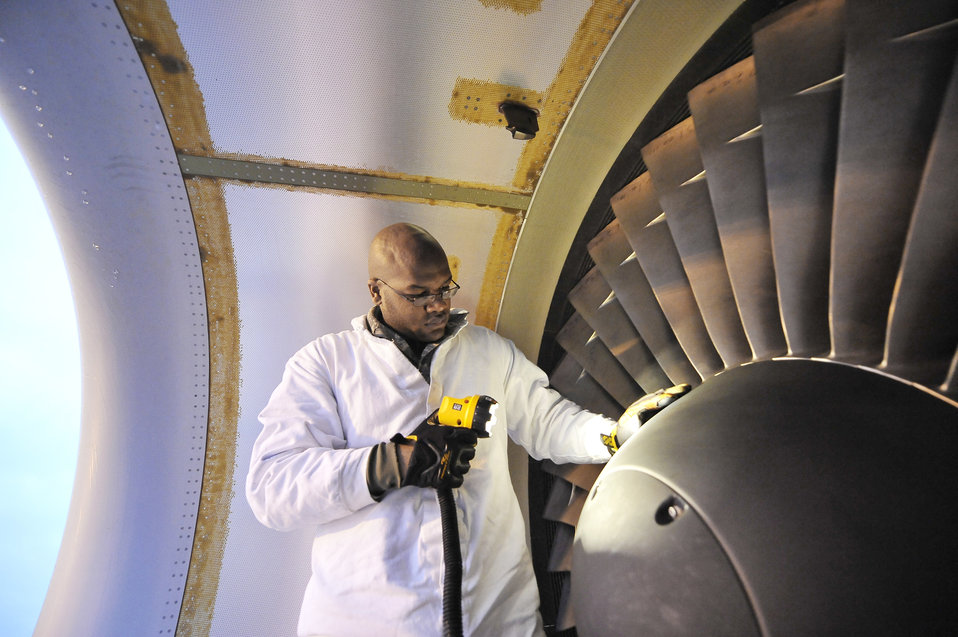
Inspecting it twice

Senior Airman Reginald Camp inspects the inlet and exhaust of a C-17 Globemaster III engine on the flightline Nov.13, 2009 at Charleston Air Force Base, S.C. Maintenance tasks include daily aircraft launch and recovery, pre- and post-flight inspections on aircraft and their engines. Airman Camp is a jet propulsion specialist with 437th Aircraft Maintenance Squadron.